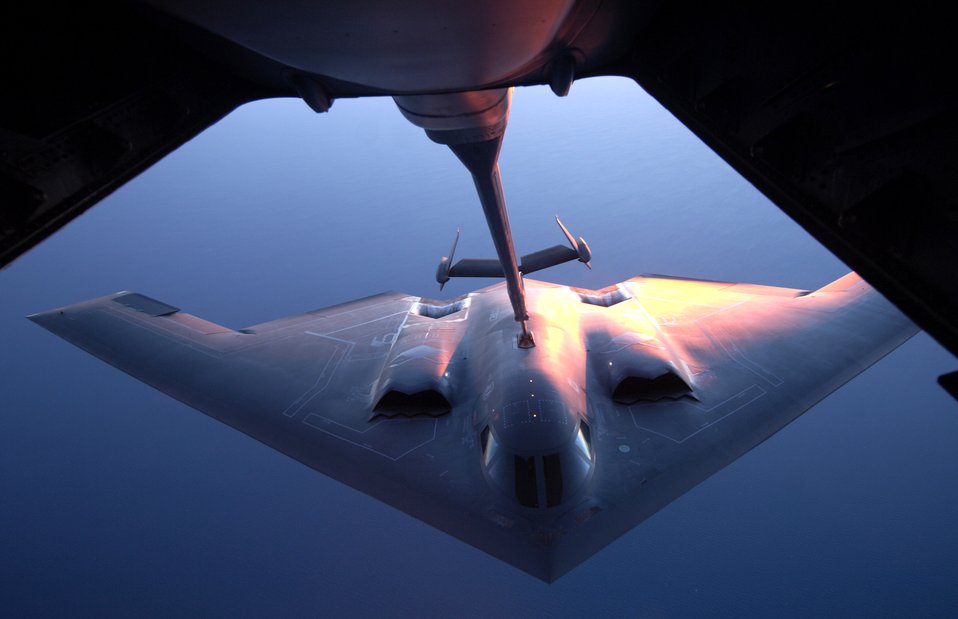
Exercise Green Lightning

A B-2 Spirit is refueled by a KC-10 Extender over Australia during exercise Green Lightning on Tuesday, July 25. The KC-10 and B-2 are from the 36th Expeditionary Wing at Guam. The exercise will test U.S. capabilities and provide operational familiarity in the region for the Pacific bomber presence as well as serve to enhance relations with the Australians.